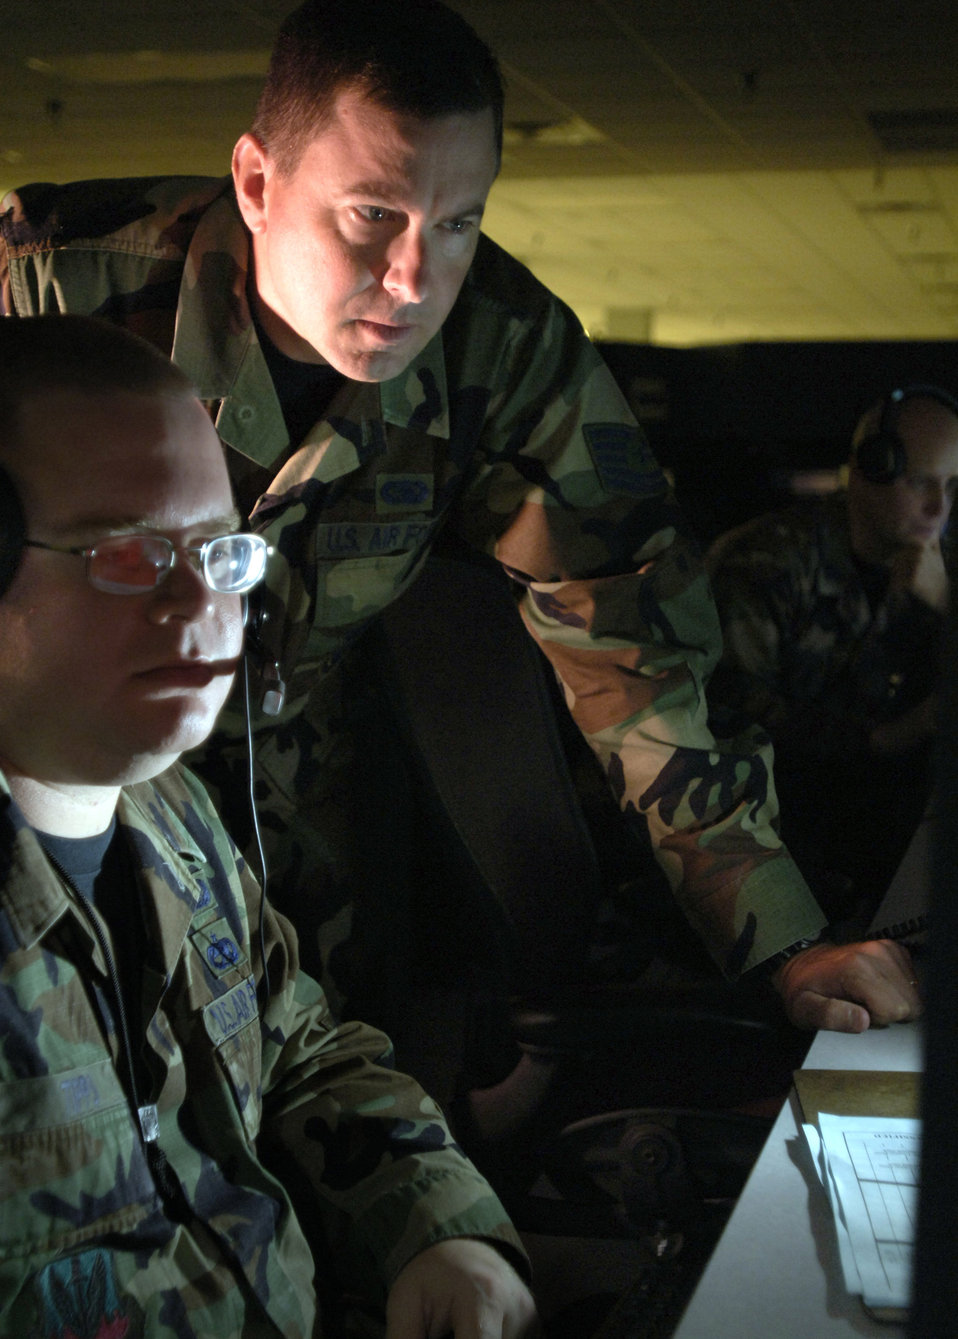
Air Force Cyber Command online for future operations

Tech. Sgt. John Webb and Staff Sgt. Clinton Tips update anti-virus software for Air Force units to assist in the prevention of cyberspace hackers July 12 at Barksdale Air Force Base, La. The Air Force is setting up the Air Force Cyber Command soon and these Airmen will be the operators on the ground floor.